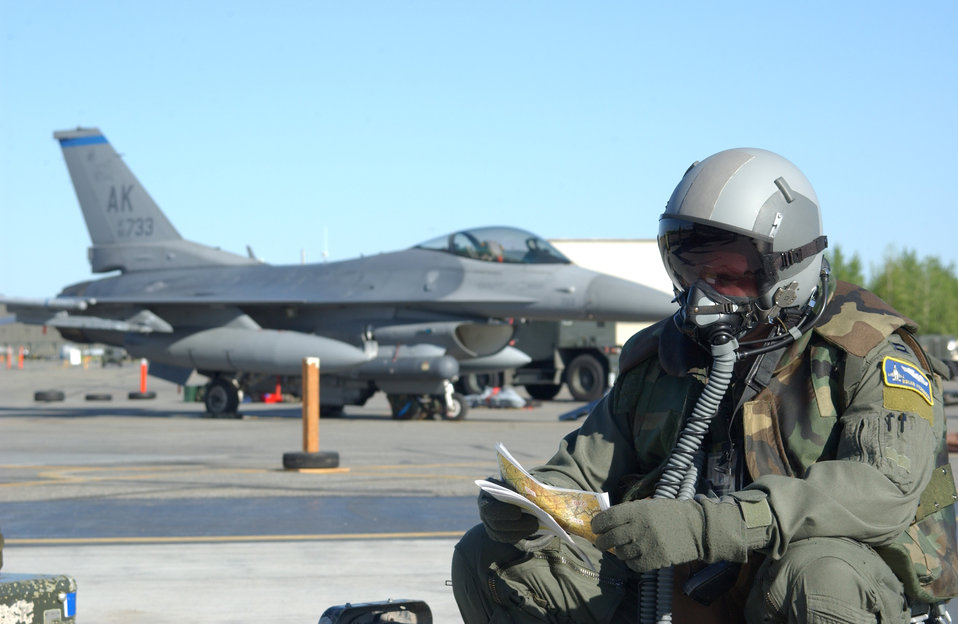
Flight plan

EIELSON AIR FORCE BASE, Alaska -- Capt. Brain Ferguson reviews his flight plan before proceding to his jet during an exercise here May 24. Captain Ferguson is an F-16 Fighting Falcon pilot assigned to the 18th Fighter Squadron.